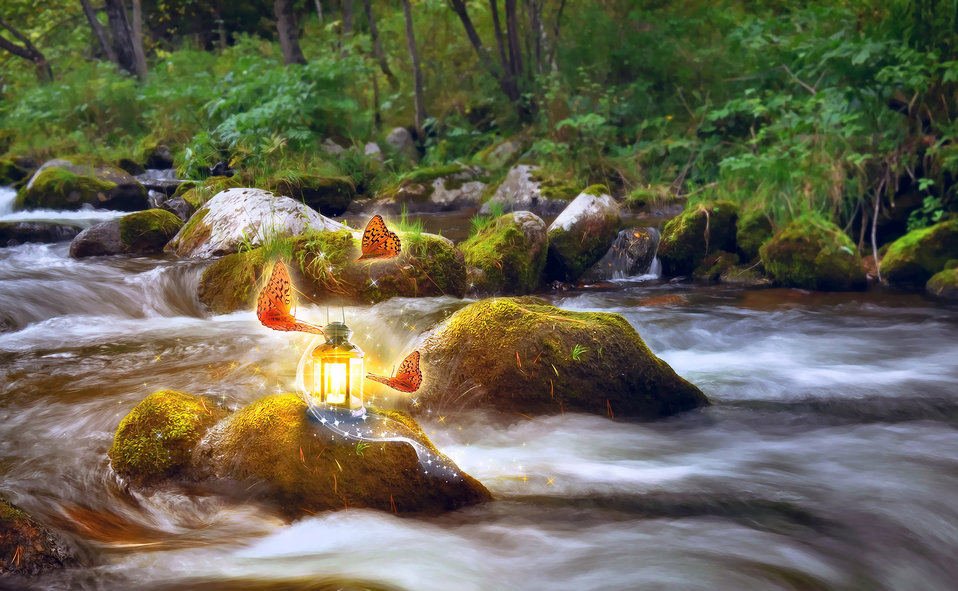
Wallpaper fantasy

Wallpaper with butterflies, a river and a magic lantern.